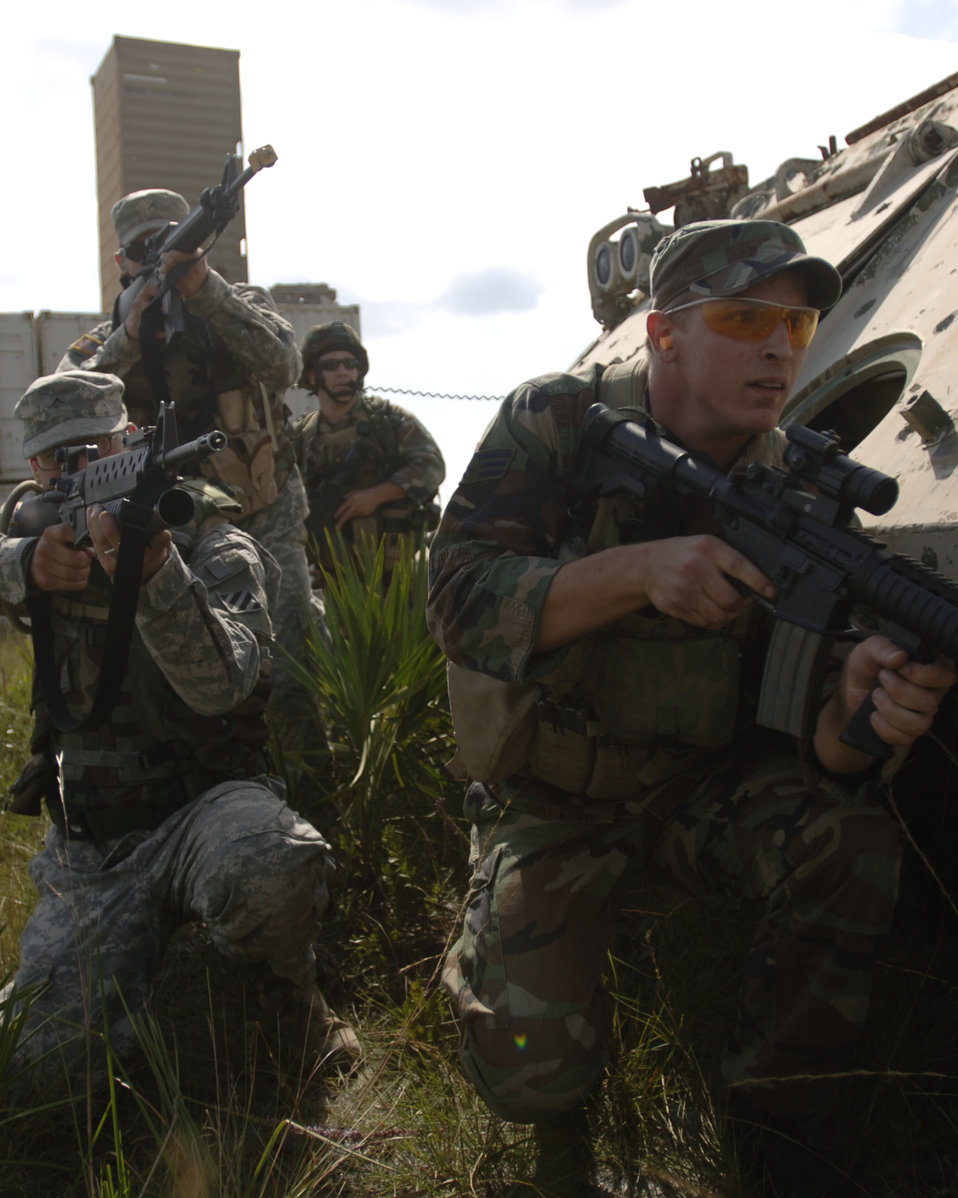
Atlantic Strike IV

Senior Airman Justin Prinski and his patrol team return fire against simulated insurgents during Atlantic Strike IV at Avon Park, Fla., Oct 23. Atlantic Strike is a joint tactical training event with more than 700 participants employing urban close-air support training in support of the war on terrorism.